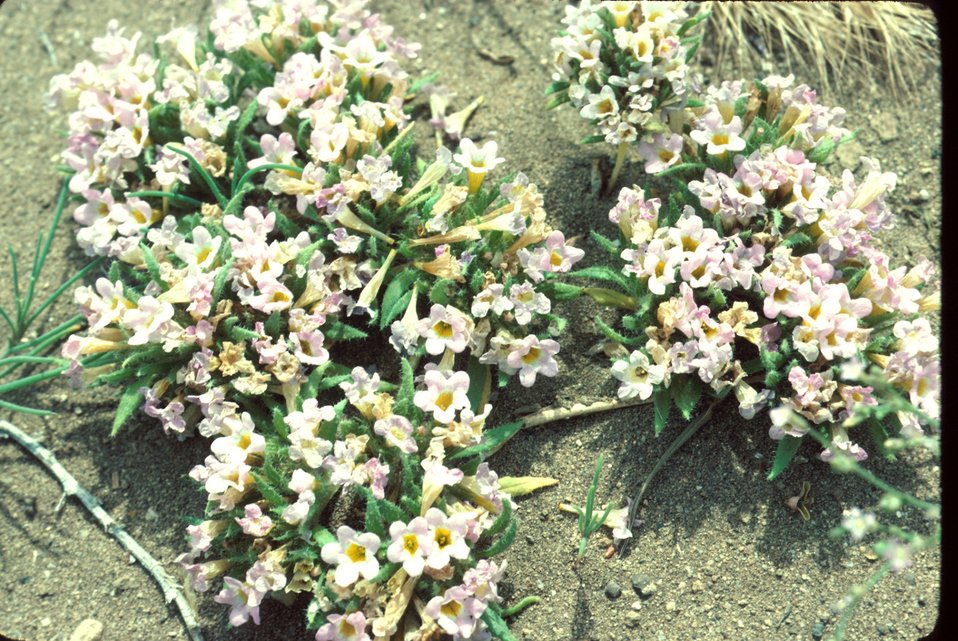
Has darker morphs Nama aretoides Wildflower